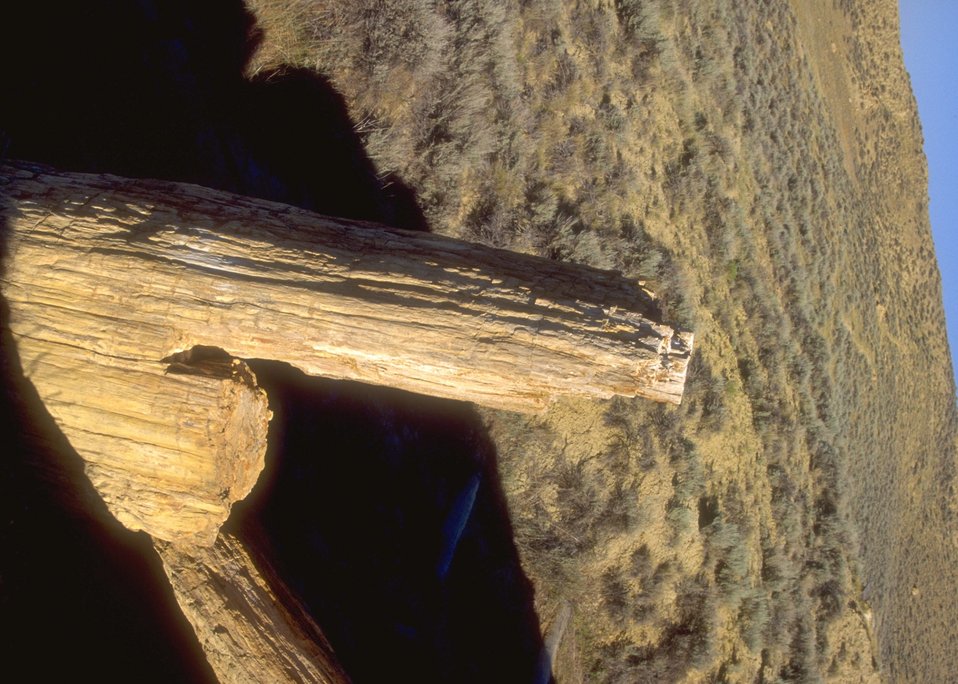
Dry Creek Petrified Tree Area, Buffalo Field Office.